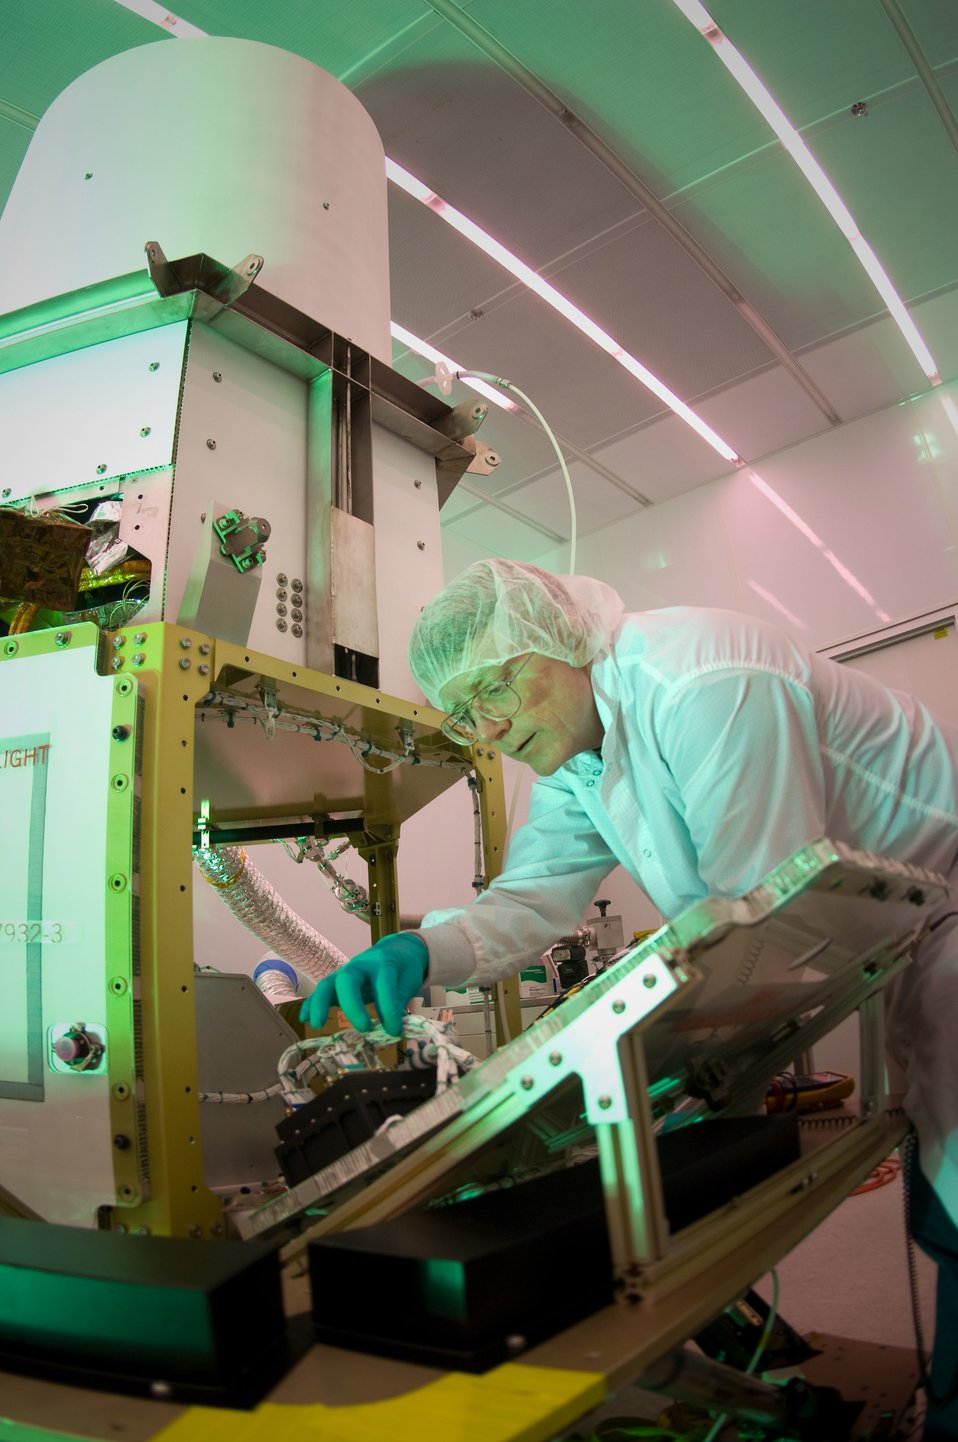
TacSat-3 Preparation

Martin Leahy performs voltage and continuity tests on a tactical satellite, known as Tactical Satellite-3, at the Space Vehicle Directorate at the Air Force Research Laboratory, Kirtland Air Force Base, N.M. The satellite is scheduled to be launched in October. Mr. Leahy is a field engineer with ATA Aerospace.